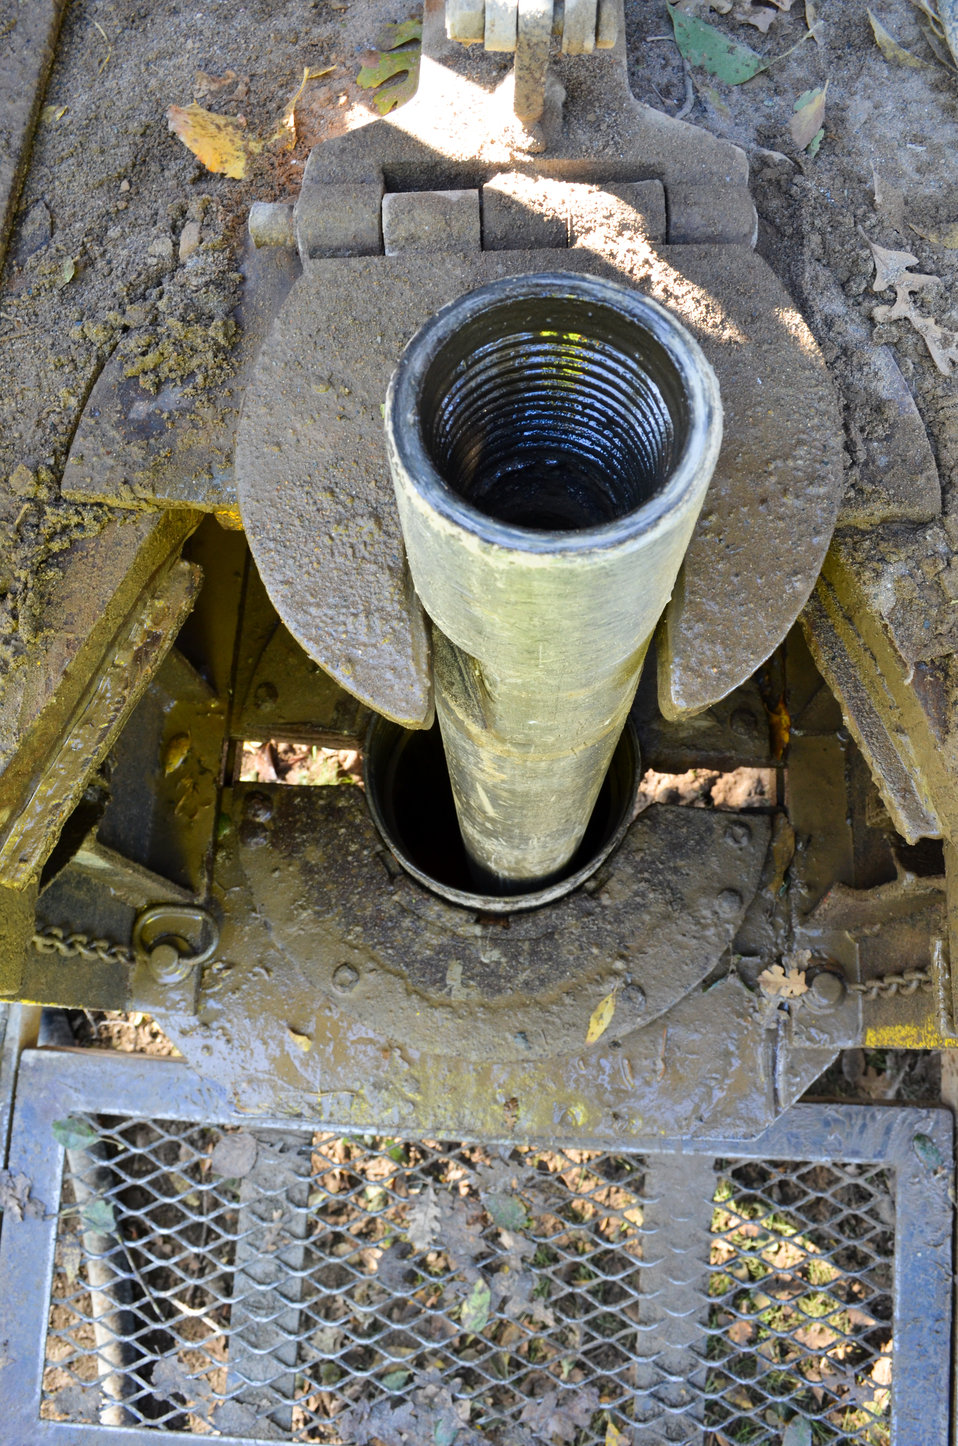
Corps contractor digs deep for answers

The view looking down of a special deep-drilling rig along the American River’s north bank in Sacramento, Calif., Nov. 18, 2011. Corps contractors are collecting samples of riverbank soil in 24-inch-tall, 4-inch-wide clear tubes, sealing them with wax and sending them to a lab for analysis. A total of seven samples were taken in November between Watt Avenue and the J Street Bridge. Engineers are assessing erosion and seepage risk along the riverbank as part of the Corps’ American River Common Features General Reevaluation Report, determining the federal plan to provide additional flood risk reduction to Natomas as well as the rest of the City and County of Sacramento. The sampling areas are left in better condition than before: They are filled with special material that prevents water seepage.